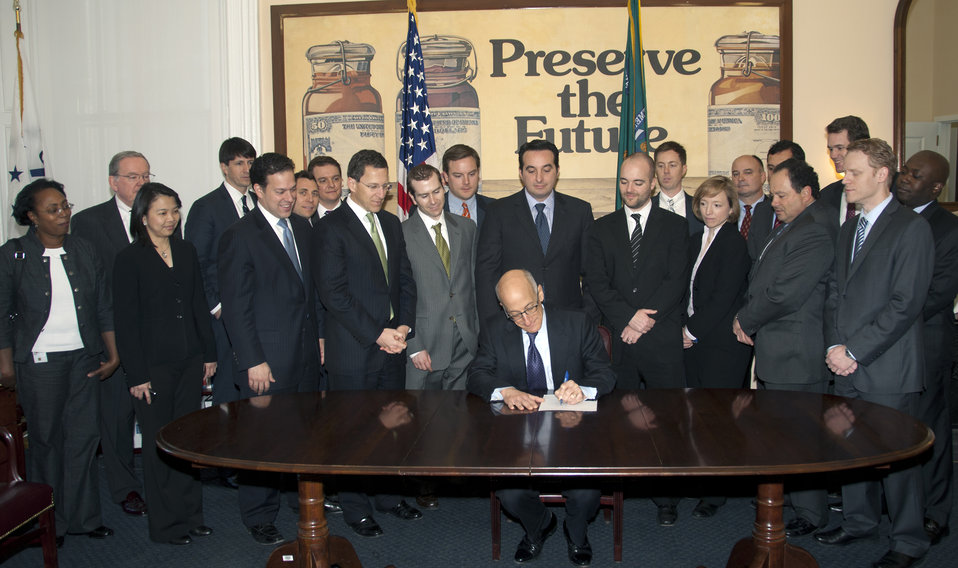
Assistant Secretary for Financial Stability Timothy G. Massad confirms receipt of the proceeds from the sale of Treasury’s final shares of AIG common stock.

Closing the deal: As Treasury’s AIG investment team looks on, Assistant Secretary for Financial Stability Timothy G. Massad confirms receipt of the proceeds from the sale of Treasury’s final shares of AIG common stock. Treasury and the Federal Reserve fully recovered the combined $182.3 billion committed to stabilize AIG during the financial crisis – plus an additional positive return of $22.7 billion for taxpayers.